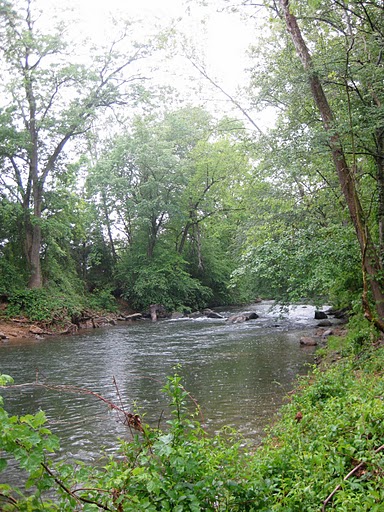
South River in Virginia

South River near Waynesboro, Virginia.